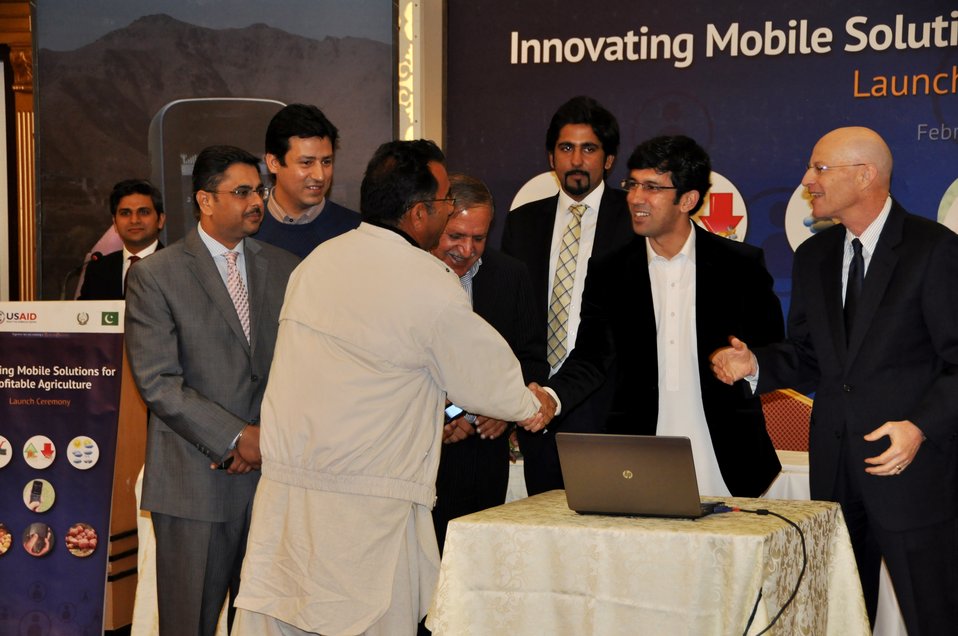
Launch Ceremony of the Mobile Agriculture Project

hahram Khan Tarrakai Minister forAgriculture, Livestock & Cooperation KP greeting a farmer/ project beneficiary